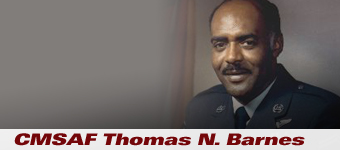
CMSAF Barnes

Chief Master Sgt. of the Air Force Thomas N. Barnes history spotlight graphic